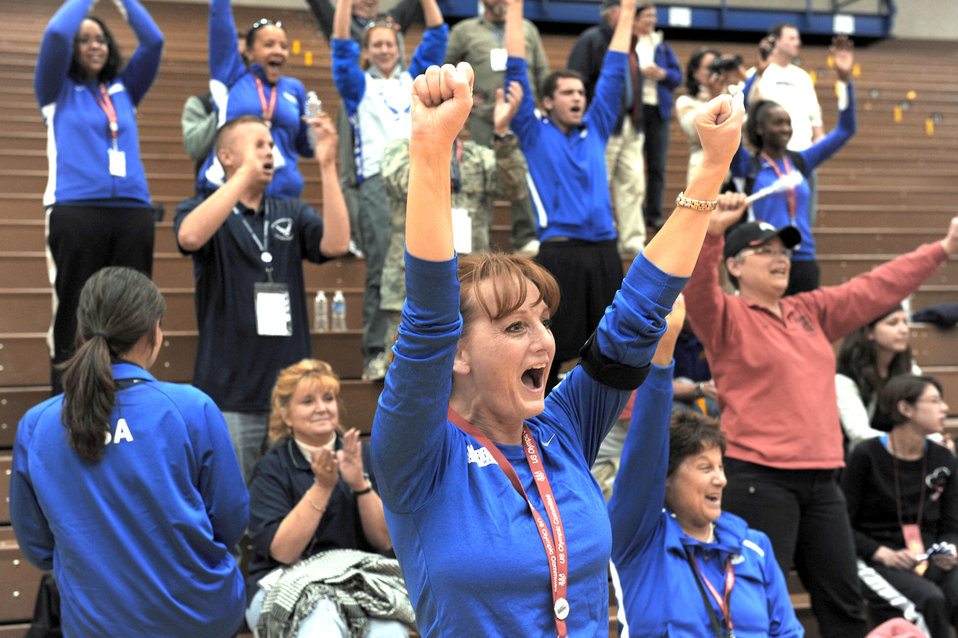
Team Air Force wins game

Team Air Force fans celebrate after the Warrior Games bronze medal match against the Navy May 12, 2010, at the Olympic Training Center in Colorado Springs, Colo. The Air Force went on to win the game 13-10.